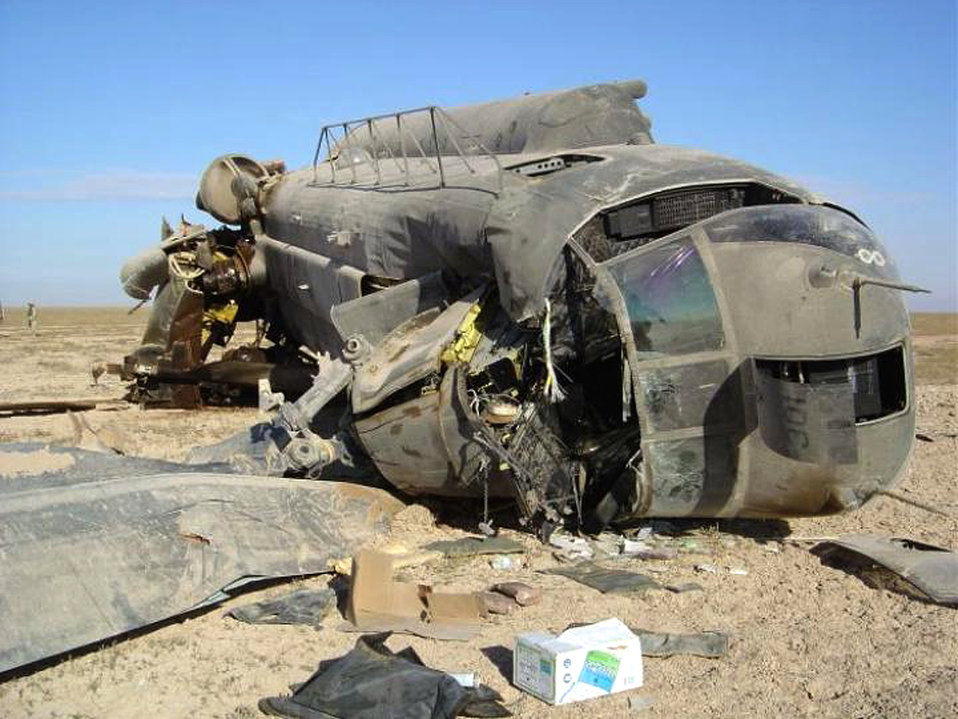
Mackay Trophy

IRAQ (AFPN) -- The wreckage of the Army CH-47 Chinook helicopter lies in the Iraqi desert. Airmen rescued its five crewmembers on April 16, 2004.